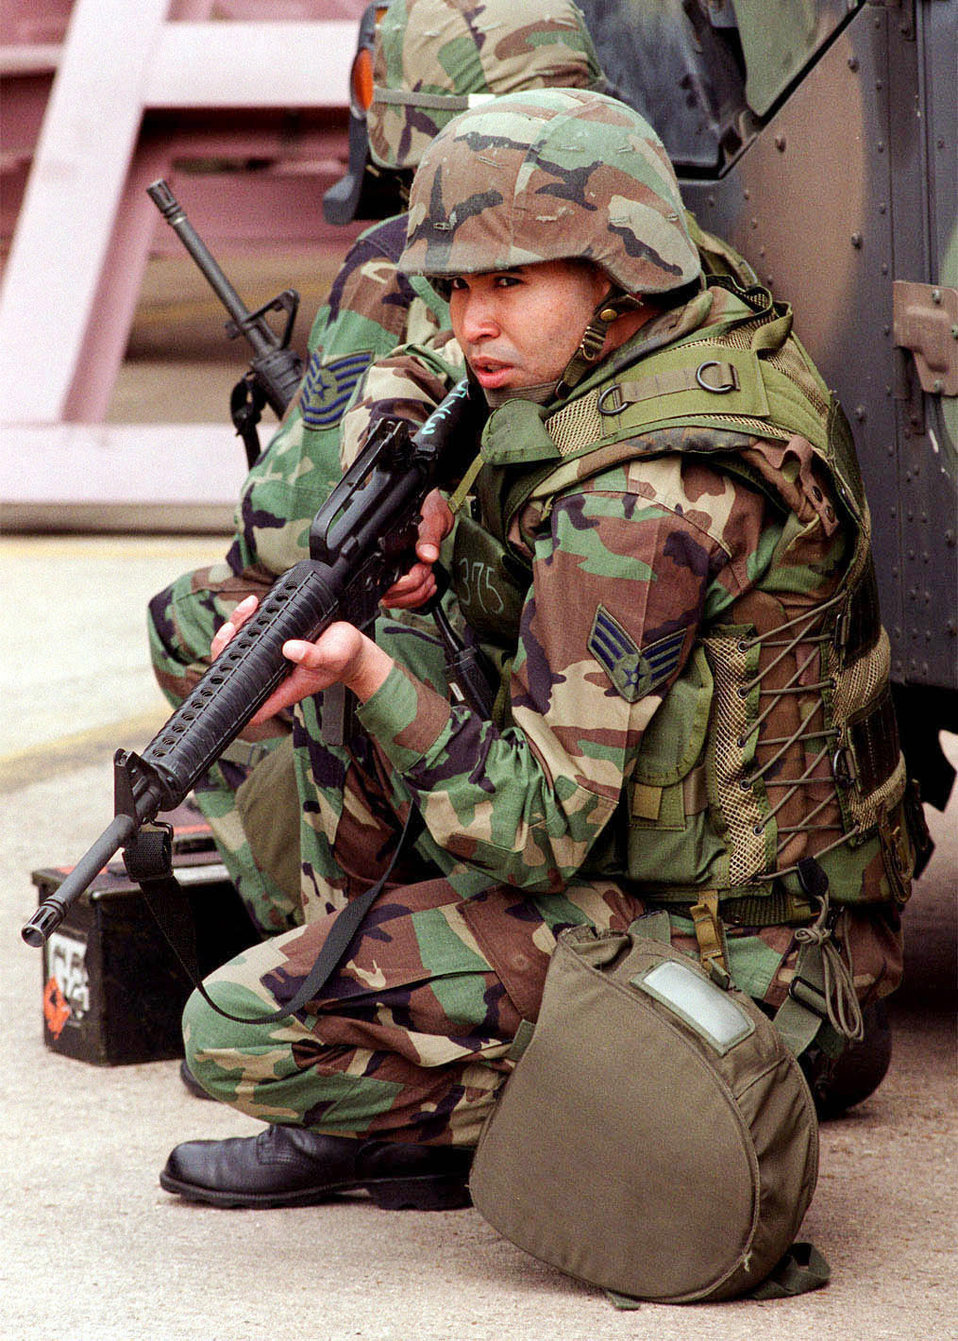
Duck and cover

ROYAL AIR FORCE LAKENHEATH, England -- Senior Airman Mario Peterson of the 48th Security Forces Squadron, 48th Fighter Wing, takes cover, during the 48th Fighter Wing local surety inspection July 19. The weeklong exercise sharpened the 48th Fighter Wing's emergency response actions, and helped them practice for an upcoming major command inspection.